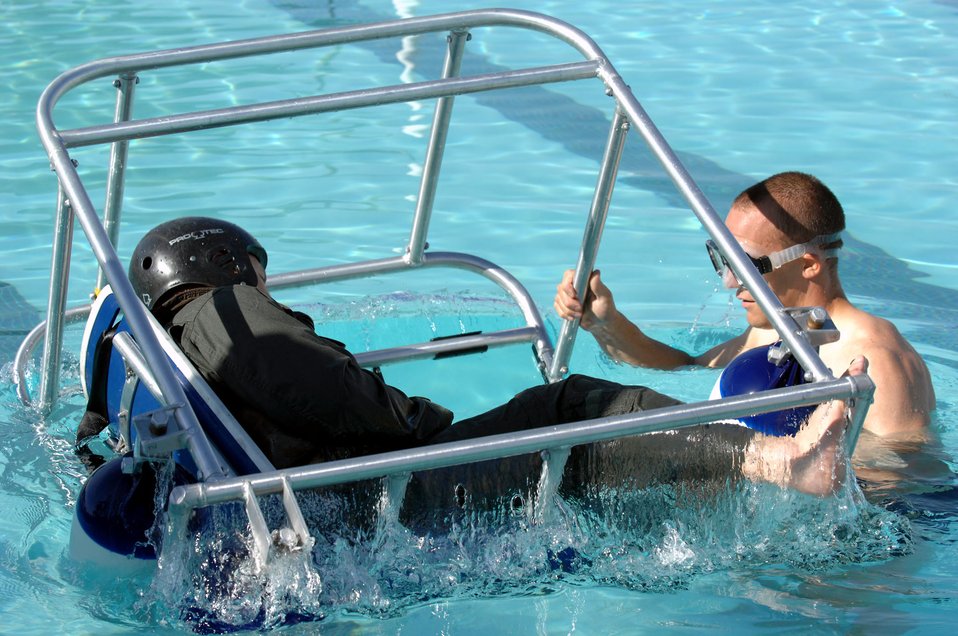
Practicing to be safe in the water

Staff Sgt. Chris Jones instructs Army Chief Warrant Officer Ron Stone on helicopter escape procedures in the event of a water landing. Sergeant Jones is a survival, evasion, resistance and escape, or SERE, instructor at Nellis Air Force Base, Nev. The Army National Guardsmen, an OH-58 Scout maintenance officer, was taking his annual water survival training.